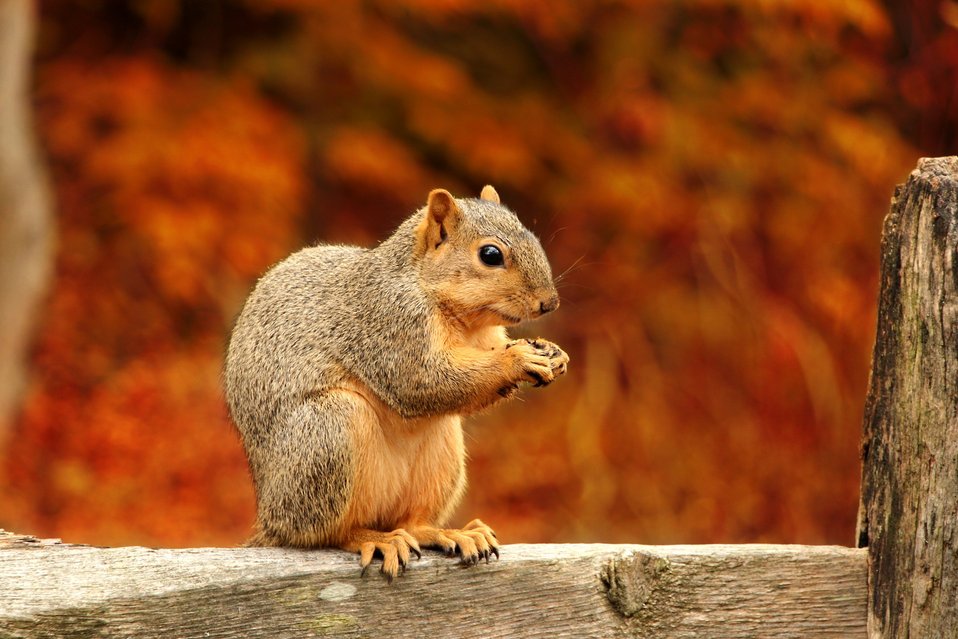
Squirrel closeup

Squirrel with background of autumn forest.